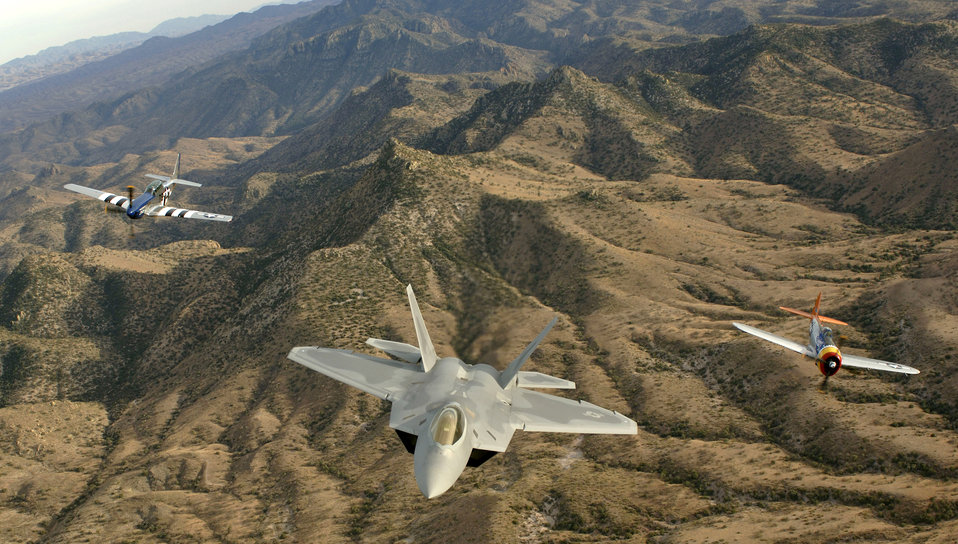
Heritage flight

A World War II-era P-47 Thunderbolt, an F-22A Raptor from Langley Air Force Base, Va., and a TF-51 Mustang fly in formation over Tucson, Ariz., Sunday, March 5, 2006, during the Air Combat Command Heritage Conference at Davis-Monthan Air Force Base. Tom Gregory flew the Thunderbolt, Lt. Col. Michael Shower flew the Raptor and Lee Lauderback flew the Mustang.